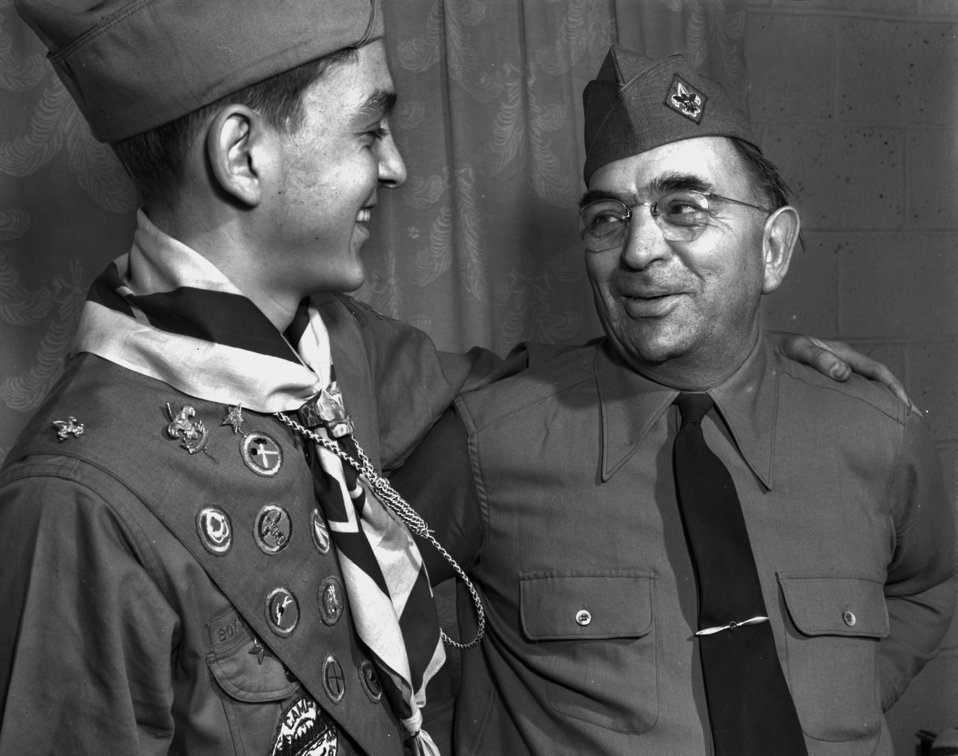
Boy Scouts Oak Ridge

3234-4 DOE photo Ed Westcott 1-10-1947 Oak ridge Tennessee